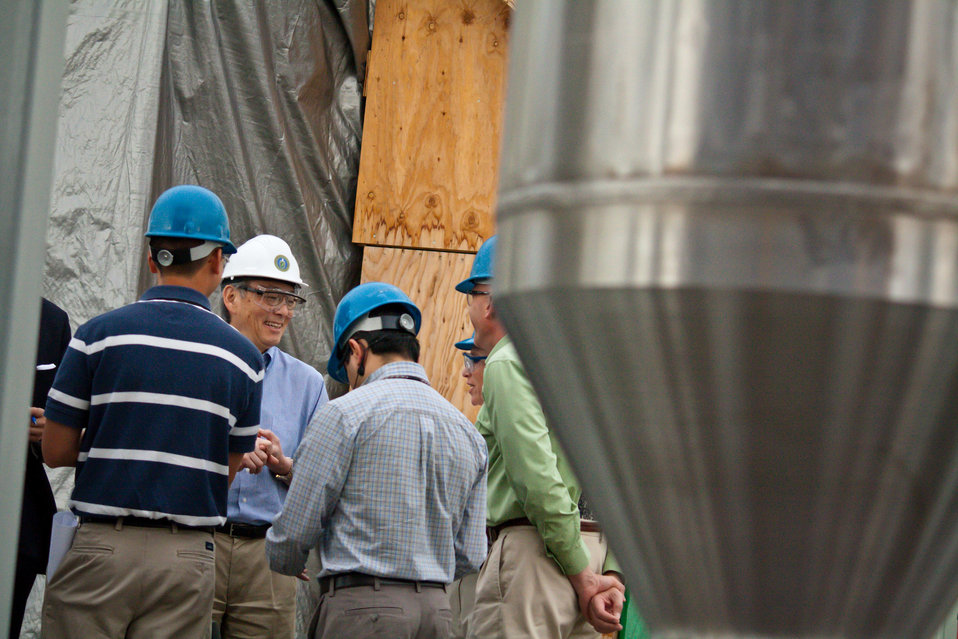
Secretary Steven Chu visits Hanford's Large Scale Integrated Test Facility.